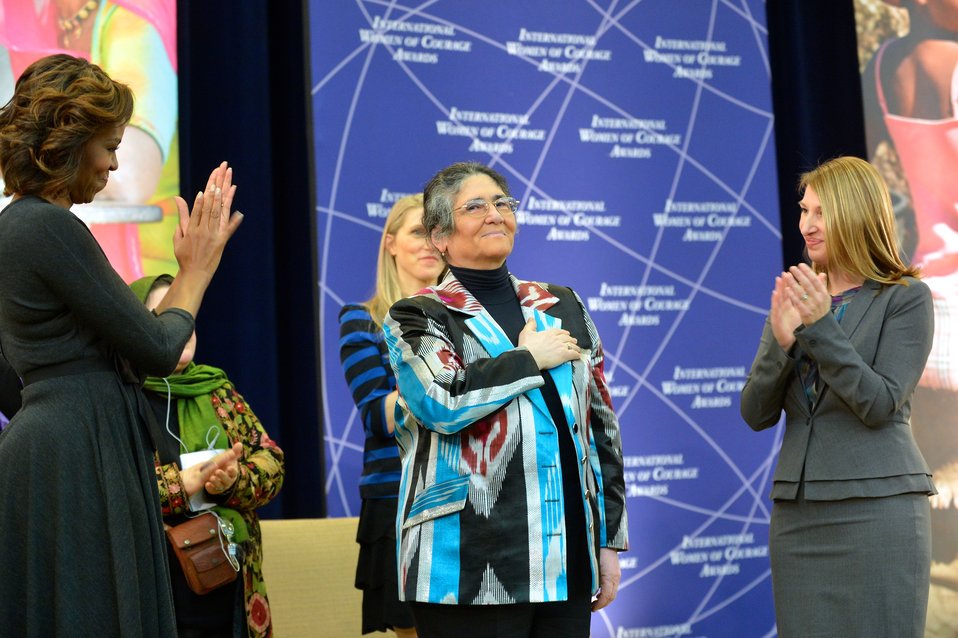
First Lady Michelle Obama and Deputy Secretary Higginbottom With 2014 IWOC Awardee Oinikhol Bobonazarova of Tajikistan

First Lady Michelle Obama and Deputy Secretary Higginbottom recognize 2014 International Women of Courage Awardee Oinikhol Bobonazarova, Director of the NGO Perspektiva Plus in Tajikistan, at the 2014 Secretary of State’s International Women of Courage Award Ceremony at the U.S. Department of State in Washington, D.C., on March 4, 2014.